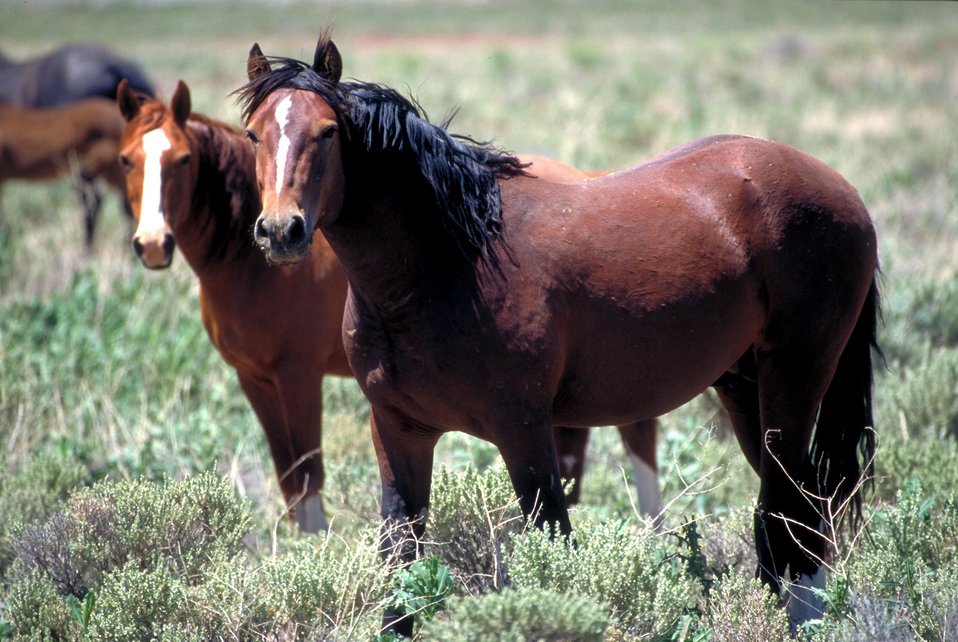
Onaqui Herd near Dugway, Utah.